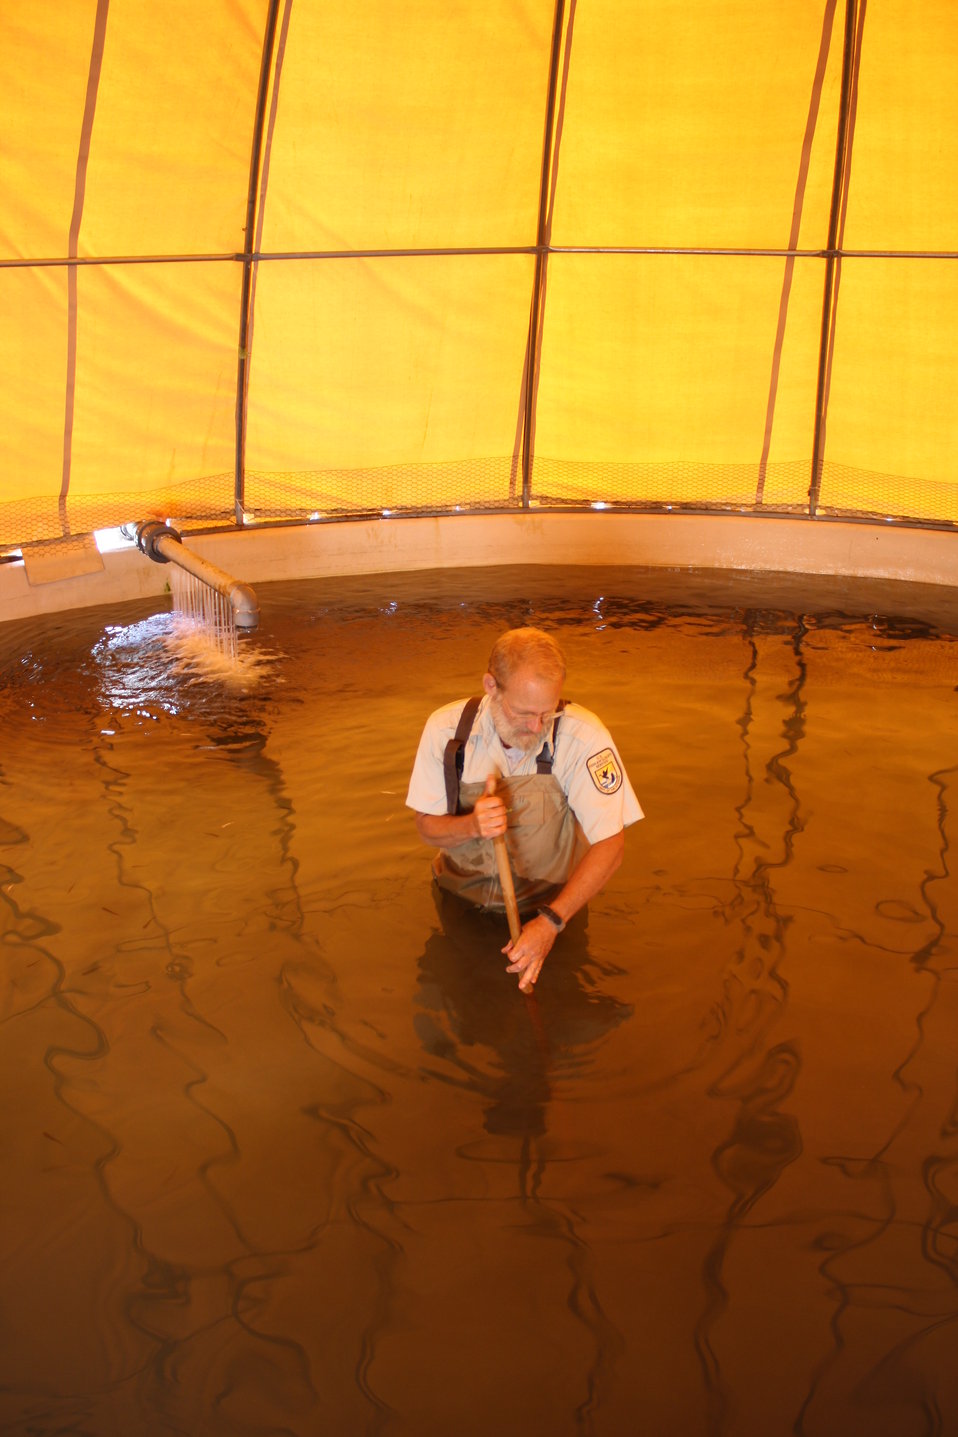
USFWS biologist cleans circular fish rearing pool of sediment

USFWS biologist Scott Frost cleans sediment deposited by Hurricane Irene flood waters from the White River from circular fish rearing pool on White River National Fish Hatchery.